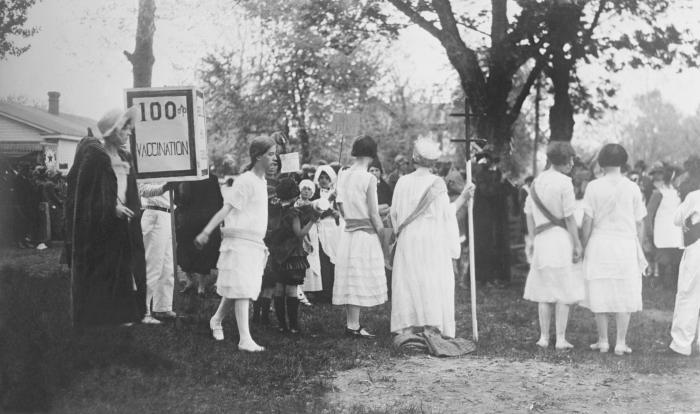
This historic photograph depicted a ceremony crowning a Virginia 'health queen'. Note the sign to the left calling for 100% vaccination. The original image was scanned from a glass lantern slide donated by the Minnesota Department of Health, and is one of a historical collection of documents and photographs devoted to observances of Child Health Day in the United States.